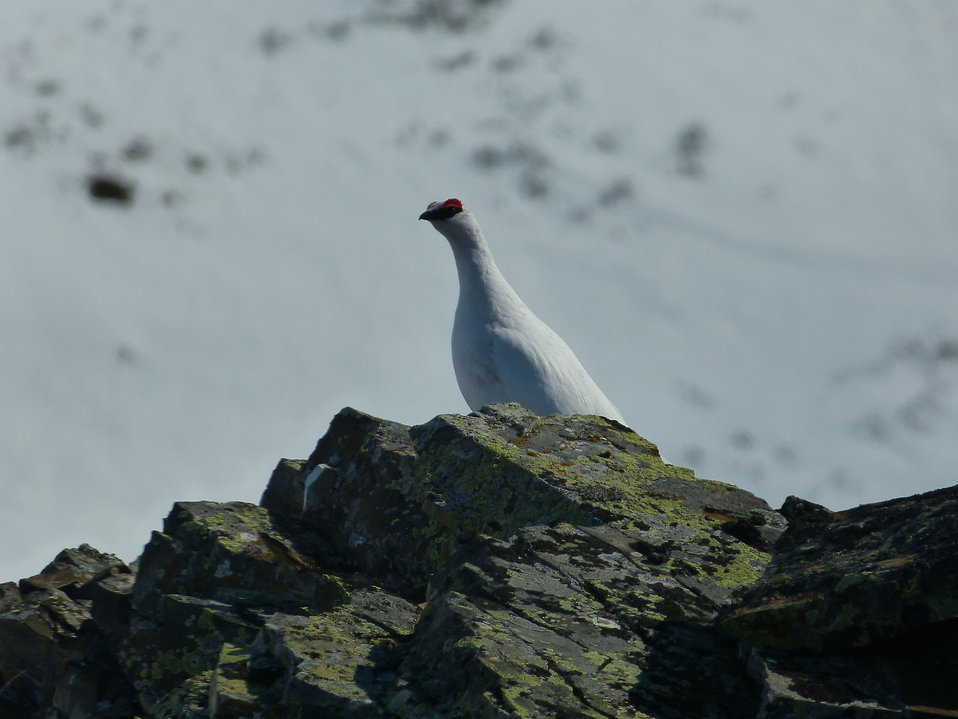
Rock Ptarmigan 5-15-2013 KSowl (1)

Rock Ptarmigan, Kilbuck Mountains on Yukon Delta National Wildlife Refuge

Photo credit: Kristine Sowl,
USFWS, YDNWR